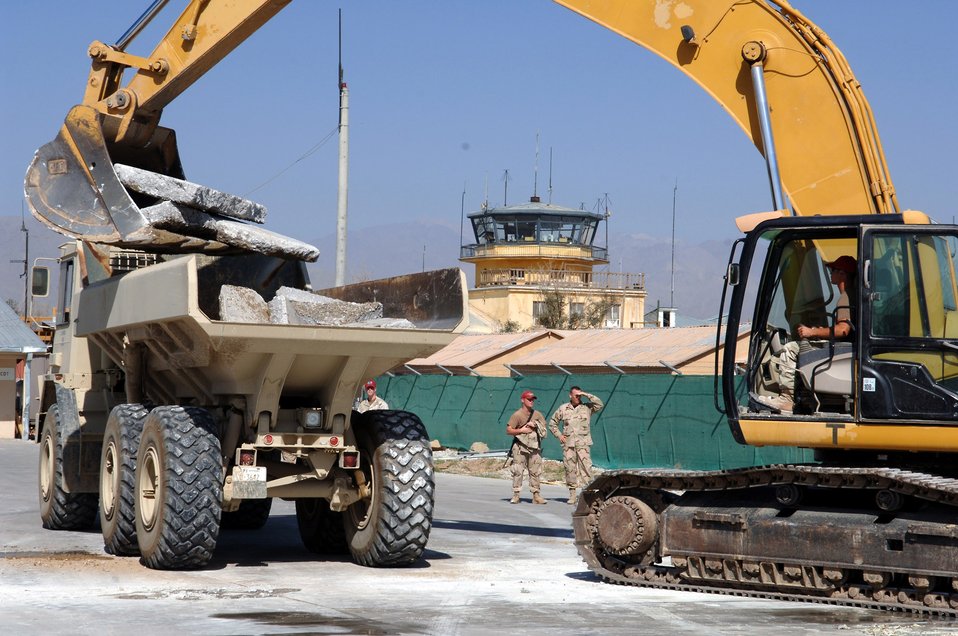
Making way

BAGRAM AIR FIELD, Afghanistan -- Staff Sgt. David Famigiletti, a pavement and heavy equipment operator, tops off the first load of landfill-bound demolished concrete at the groundbreaking of the new passenger terminal here Oct. 17. The 1st Expeditionary Red Horse Group is here to build the 7,750-square-foot terminal, which they expect to open in early 2006. The sergeant deployed here from Nellis Air Force Base, Nev.